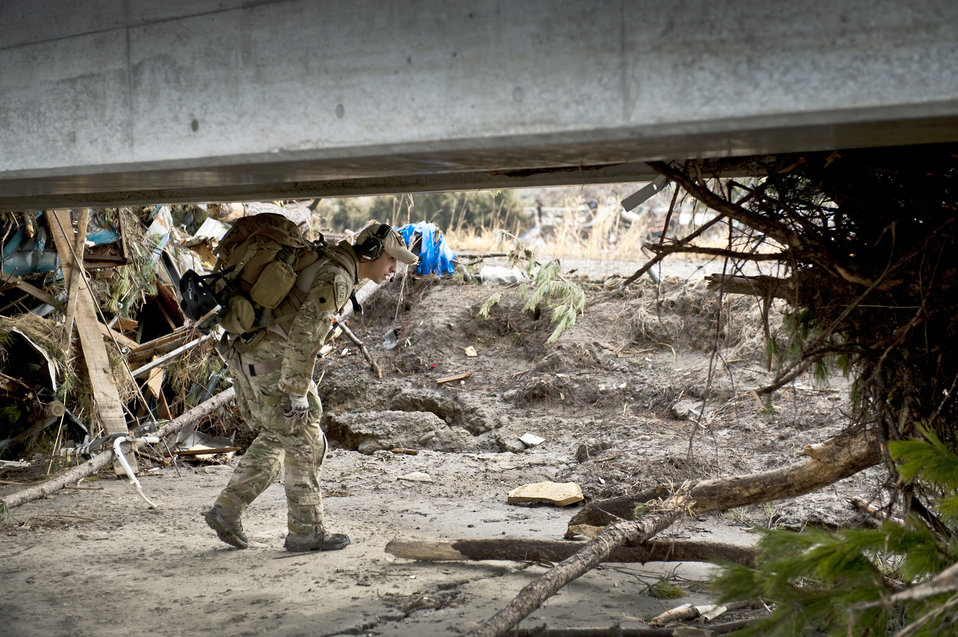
Headline

U.S. Air Force Senior Airman Steven Nizbet, a 320th Special Tactics Squadron (STS) pararescueman, looks for trapped survivors at Sendai Airport, Japan, March 16, 2011. Members of the 320th STS from Kadena Air Base, Japan, deployed to Sendai Airport to help clear the runway and make it ready for fixed-wing aircraft traffic.